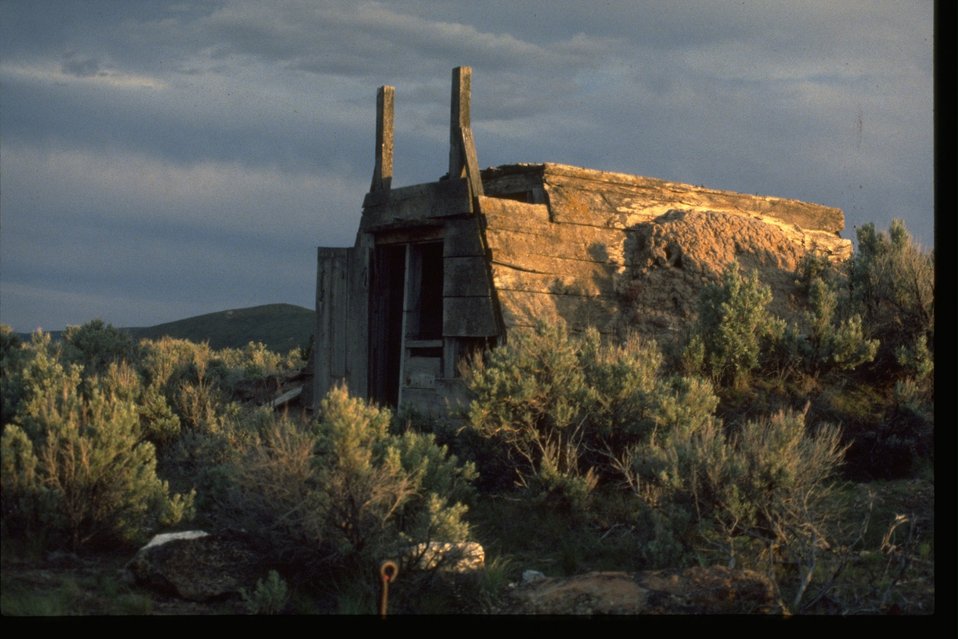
Old Flagstaff Mine near the NHOTIC.